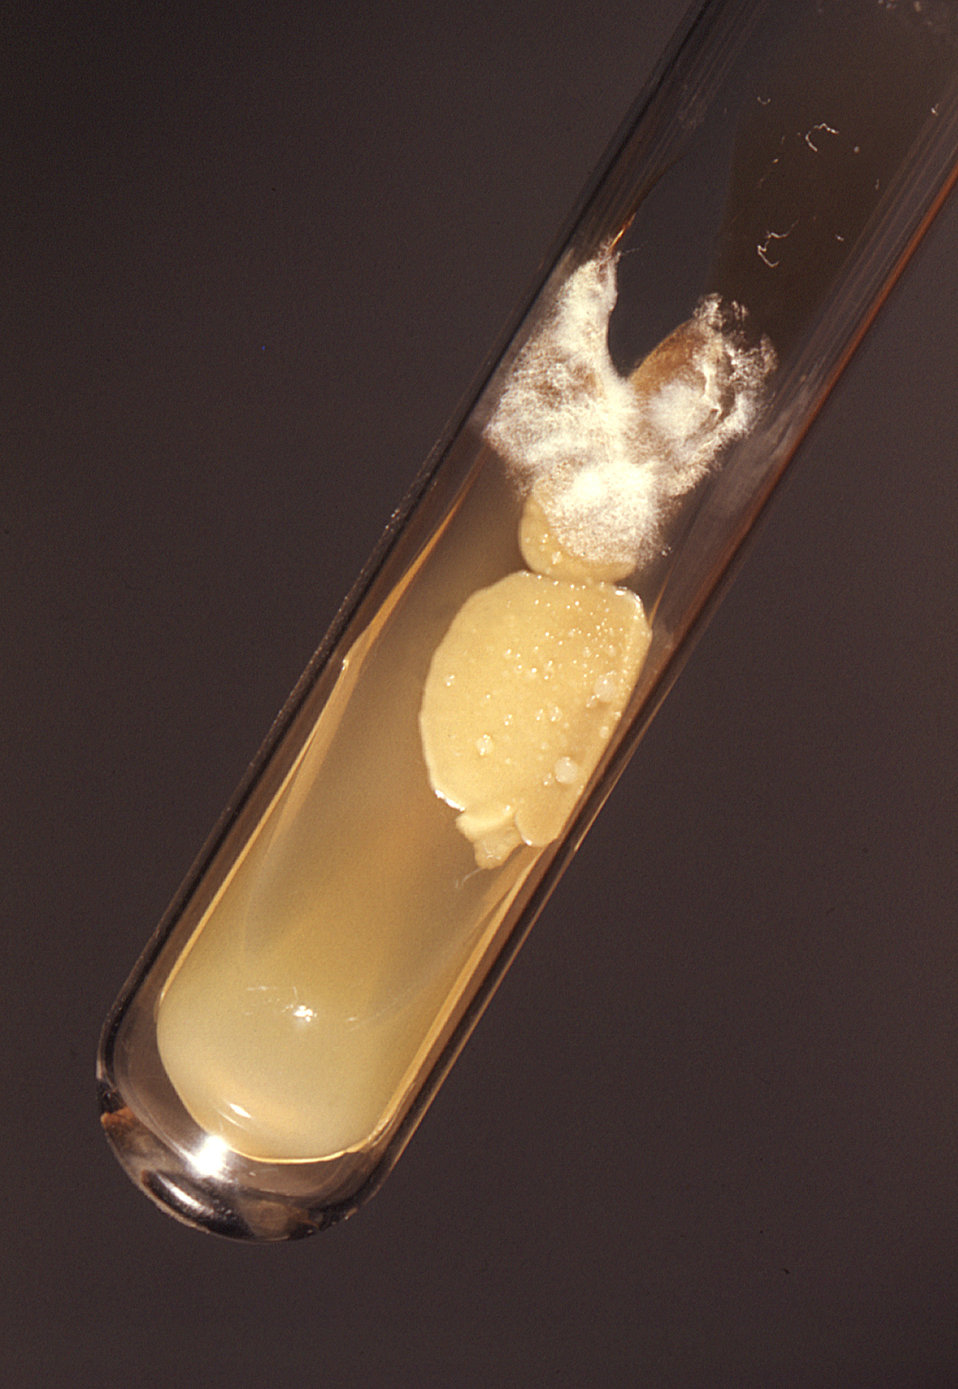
This photograph depicts a test tube slant culture, which had been colonized by what was determined to be two different organisms, Cryptococcus neoformans and Histoplasma capsulatum. These fungal organisms were isolated from soil specimens retrieved from Hopkinsville, Kentucky.